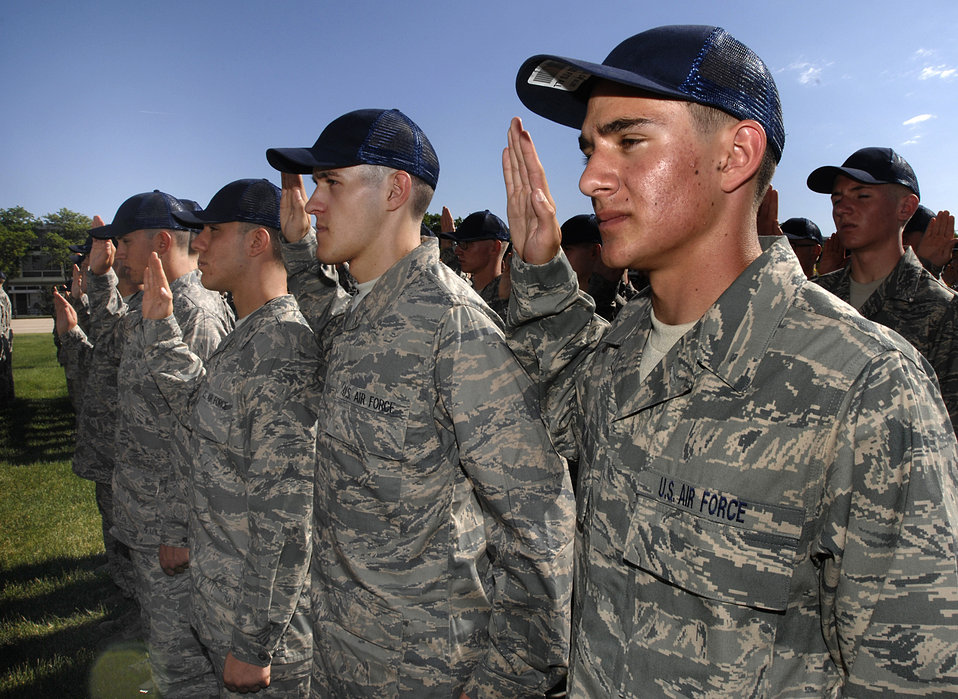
Class of 2012 Arrives

The Class of 2012 recites the Oath of Allegiance on Day Two of the 38 days of Basic Cadet Training June 27 at the U.S. Air Force Academy, Colo. Inprocesing marks the start of 38 days of Basic Cadet Training, which is designed to prepare basic cadet trainees for entry into the cadet wing.